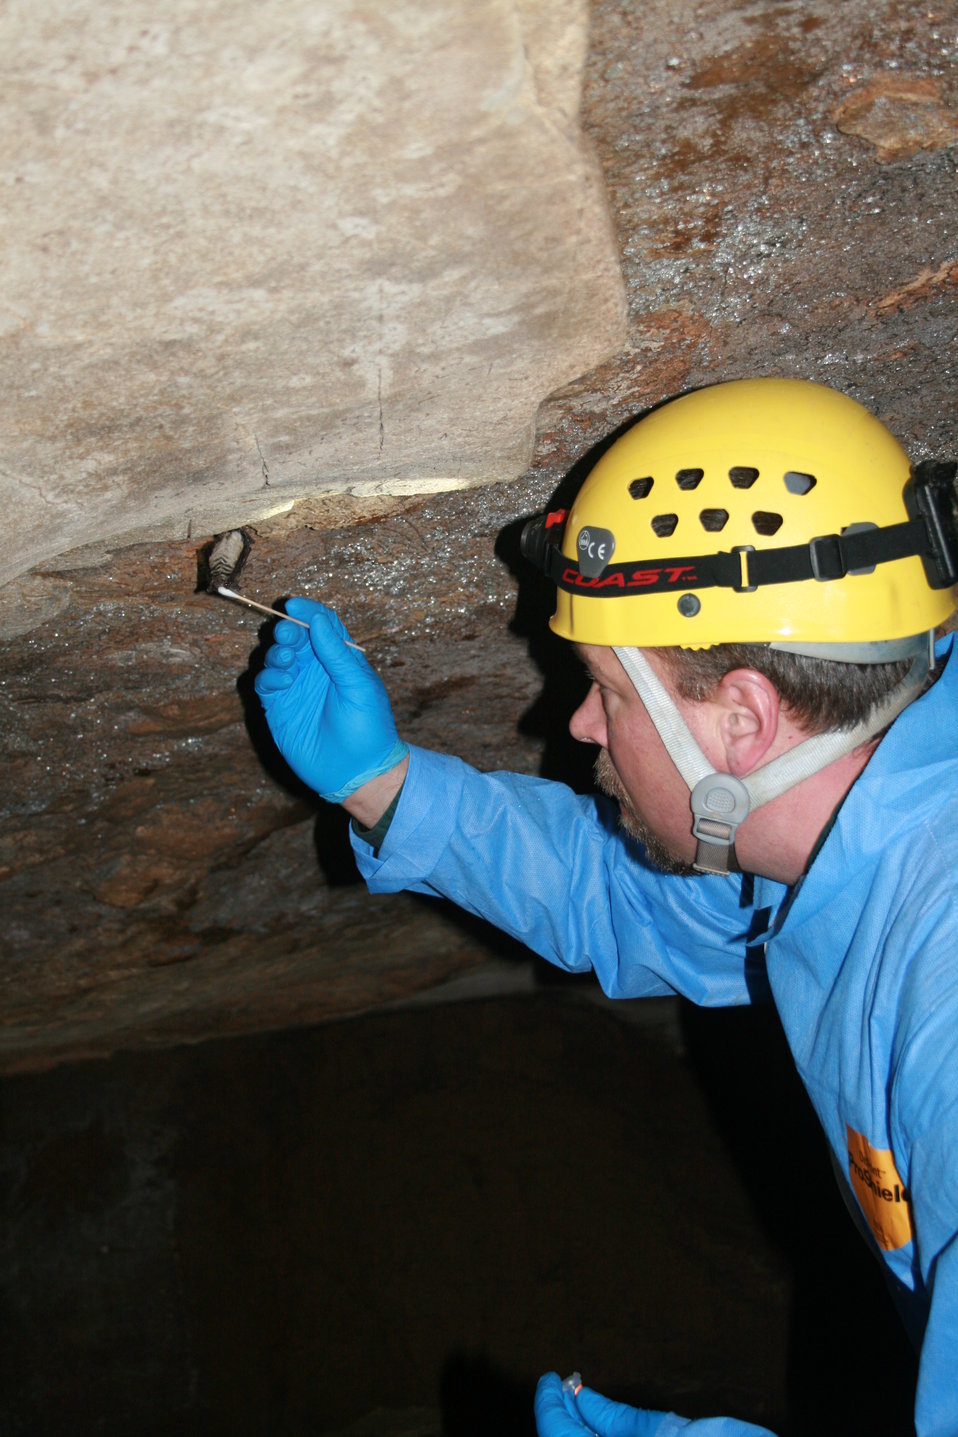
MDC biologist swabs bat

MDC biologist Tony Elliot collects research samples from a healthy Indiana bat (Myotis sodalis)